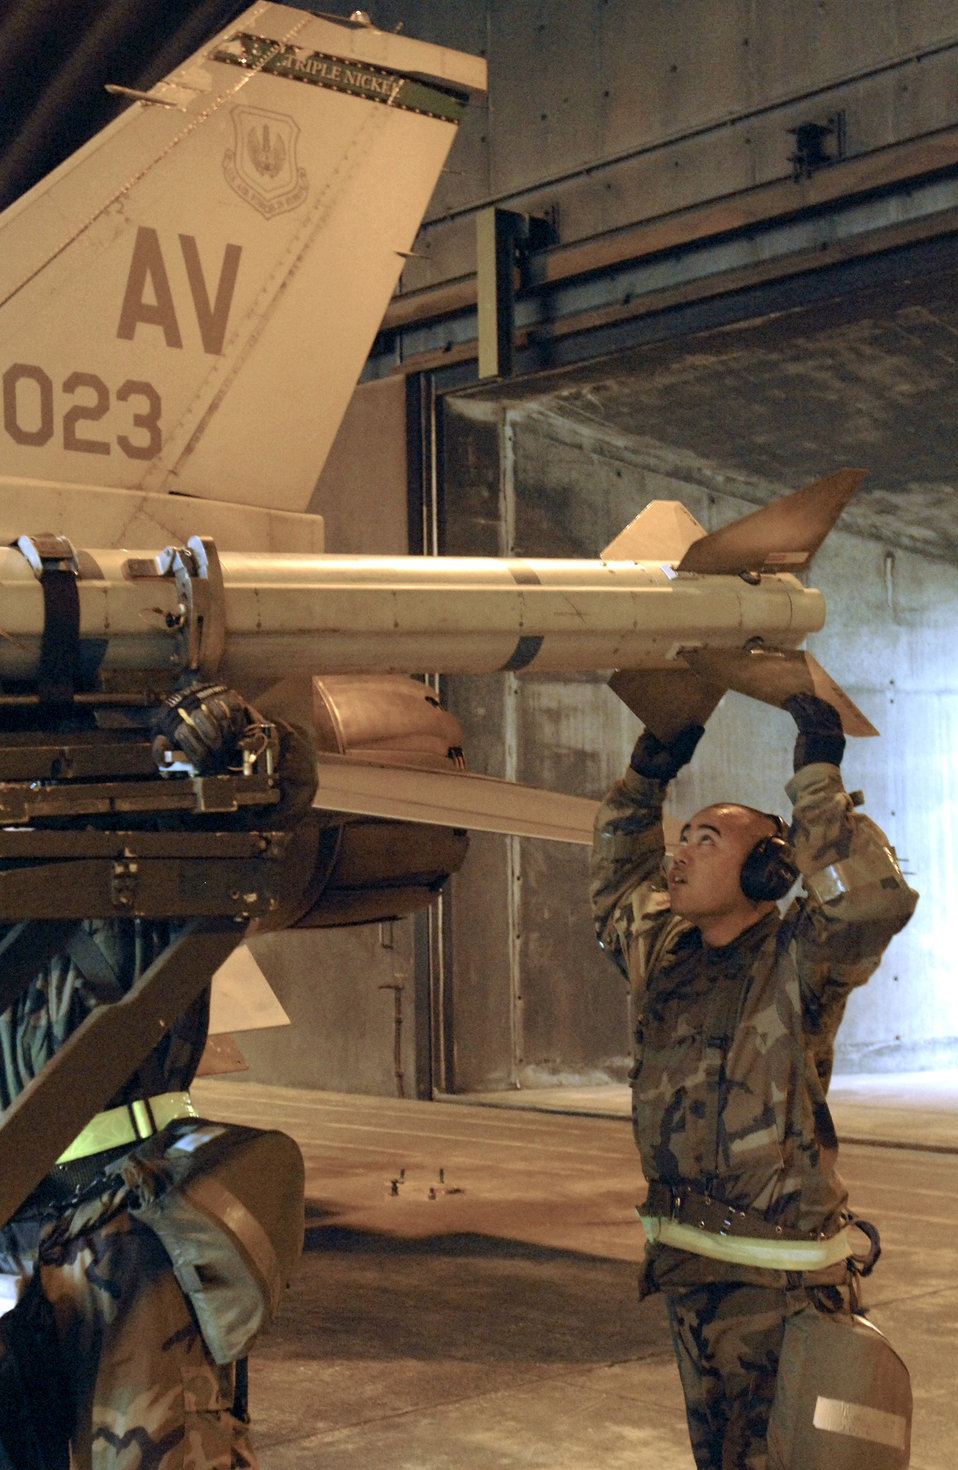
Bring on the evaluators, we're ready!

Staff Sgt. Joseph Sundita helps load a missile onto an F-16 Fighting Falcon March 8 during a NATO Tactical Evaluation at Aviano Air Base, Italy. The evaluation is to determine if Aviano's 31st Fighter Wing is prepared to support NATO Response Force 9/10. Sergeant Sundita is with the 31st Aircraft Maintenance Squadron.